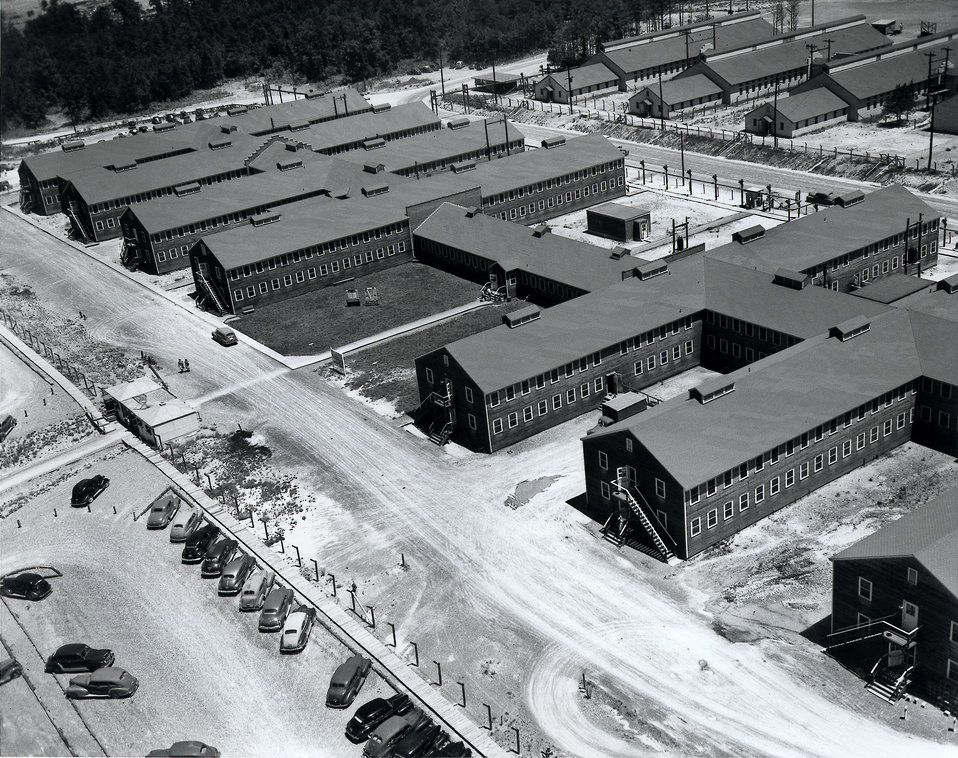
MED Adm. Bldg. Oak Ridge

pro 790 DOE photo by Ed Westcott 1943
Oak Ridge Tennessee